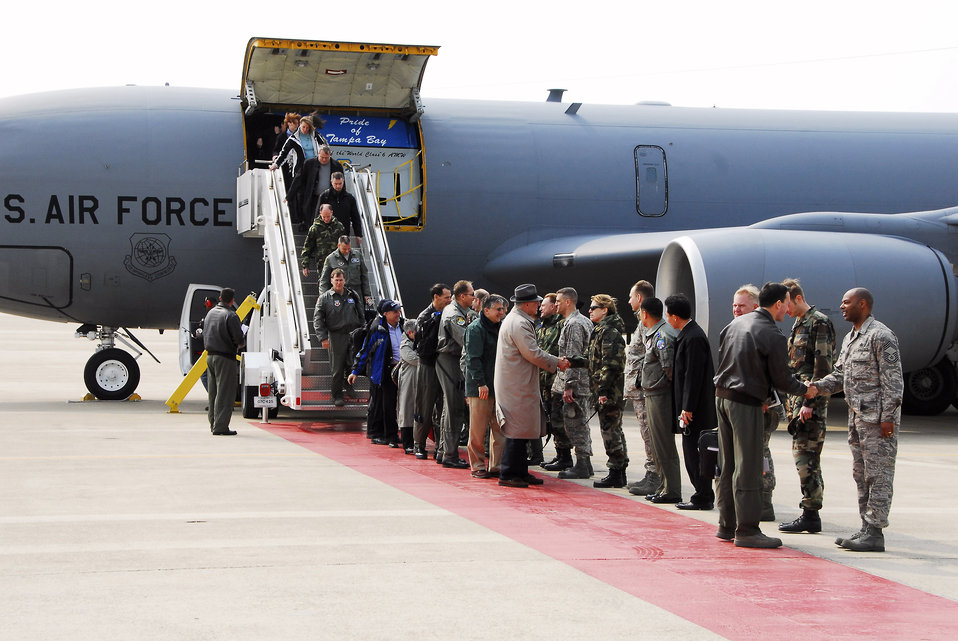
AF Board members visit Kunsan Air Base

Leaders of Kunsan Air Base, South Korea, greet Air Force Board members as they arrive April 2. The board members visited Kunsan for a first-hand look at the base and its mission. Kunsan is the home of the 8th Fighter Wing.